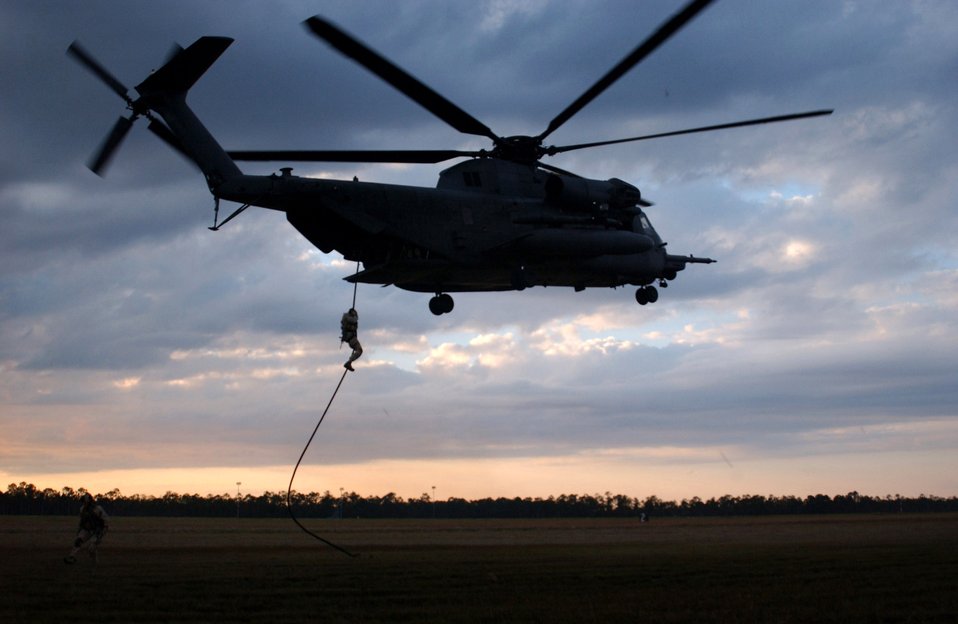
AFSOC scores safety trifecta

Special operations forces practice fast roping from an MH-53 Pave Low of the 20th Special Operations Squadron at Hurlburt Field Fla. Air Force Special Operations Command dominated the 2006 Air Force safety award program, garnering the service's top awards for best major command safety record, most effective MAJCOM-level flight safety program, and best ground safety program.